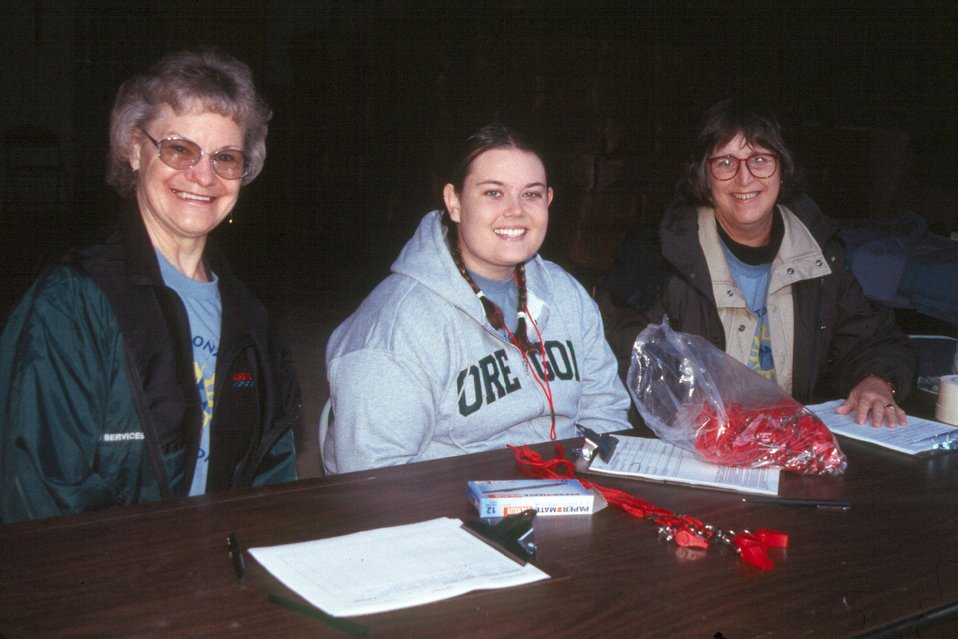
BLM staff, Ardis Ott, Krysten Yates, and Jill Bard, welcome volunteers